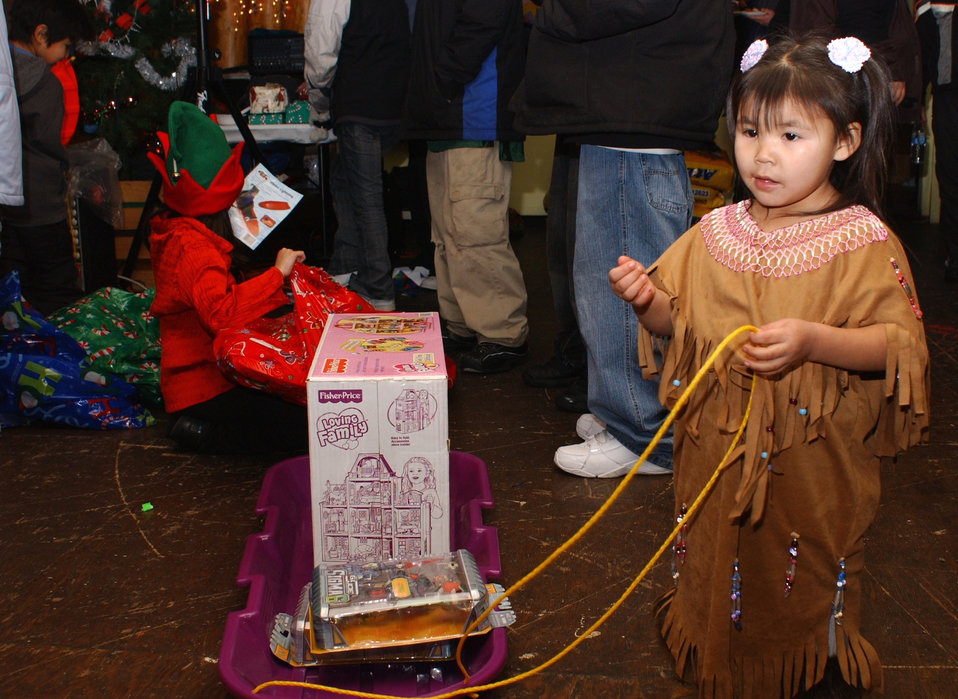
Arctic Village 2006

Three-year-old Kayla Nikolai carries her toys off in her new sled after visiting with Santa on Dec. 11. Santa made his 40th annual trip to Arctic Village (north of Fort Yukon, Alaska) with the help of the 517th Airlift Squadron's C-130 Hercules from Elmendorf, Alaska. Due to a change in aircraft at Elmendorf, this will be the last trip that the 517th Airlift Squadron makes to Arctic Village. The Alaska Air National Guard will add Arctic Village to its list of destinations during Operation Santa.